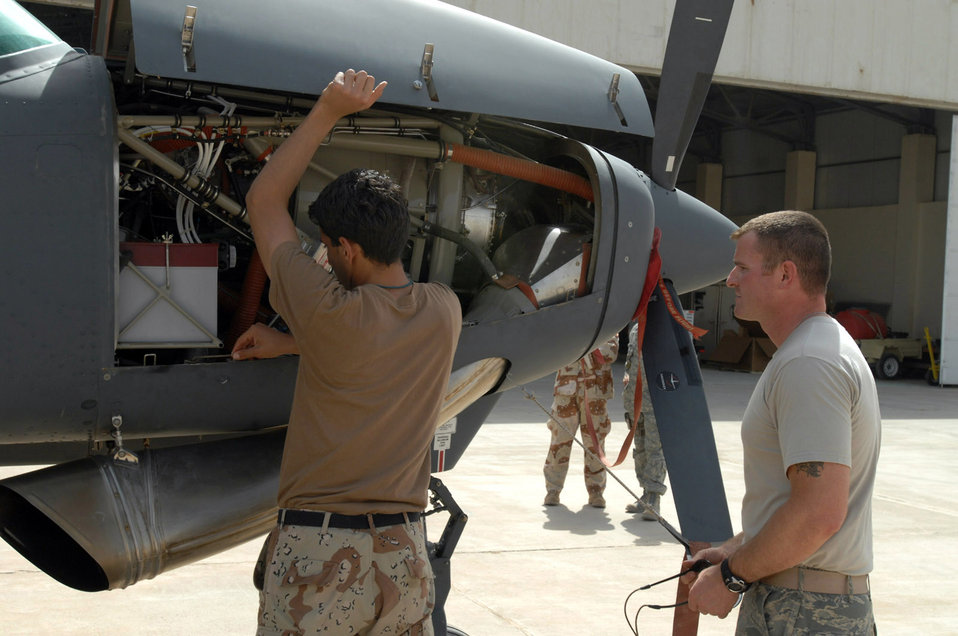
Iraqi airmen keep fleet soaring

An Iraqi airman performs an inspection on a Cessna June 7 at Kirkuk Air Base, Iraq. While Iraqi air force pilots continue flying sorties to aid stability in their nation, Iraqi maintainers on the ground have recently achieved important benchmarks to keep their fleet in the air. Airmen with the Iraqi air forces' 3rd Squadron took over a wide variety of maintenance duties on the unit's Cessna intelligence, surveillance and reconnaissance fleet, a task formerly performed by U.S. contractors.